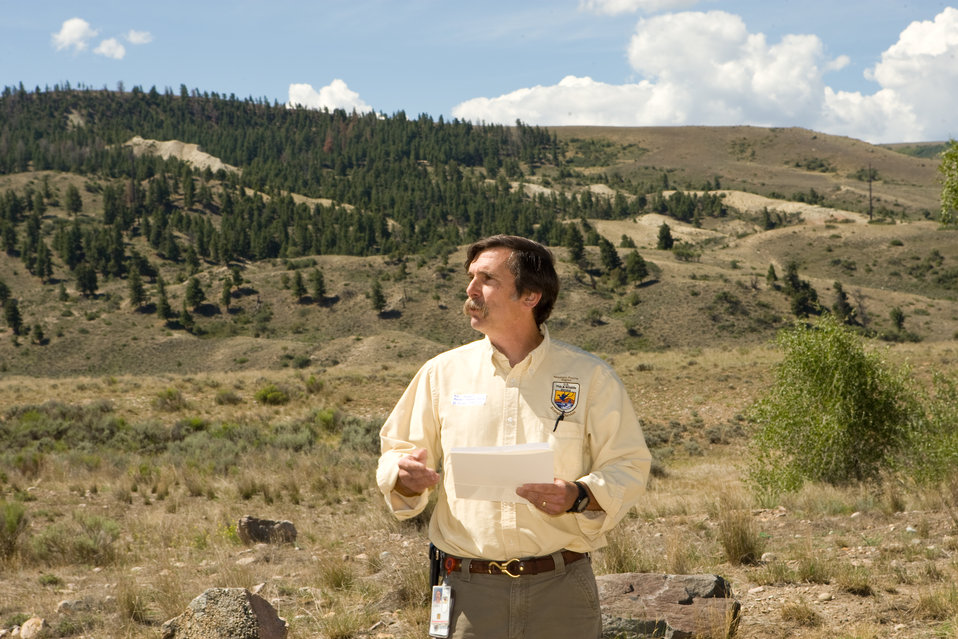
Colorado Rare Plant Conservation Initiative

The Colorado Rare Plant Conservation Initiative (RPCI) is a partnership of 23 statewide and regional agencies, private organizations, and academic institutions working to conserve 121 rare plants in Colorado. As part of these efforts the group developed the Colorado Rare Plant Conservation Strategy, developed Best Management Practices to reduce energy development impacts, addressed climate change, and developed focused strategies for the conservation of individual species at eight priority landscapes. The group has also worked to coordinate volunteer efforts for plant conservation across the state.